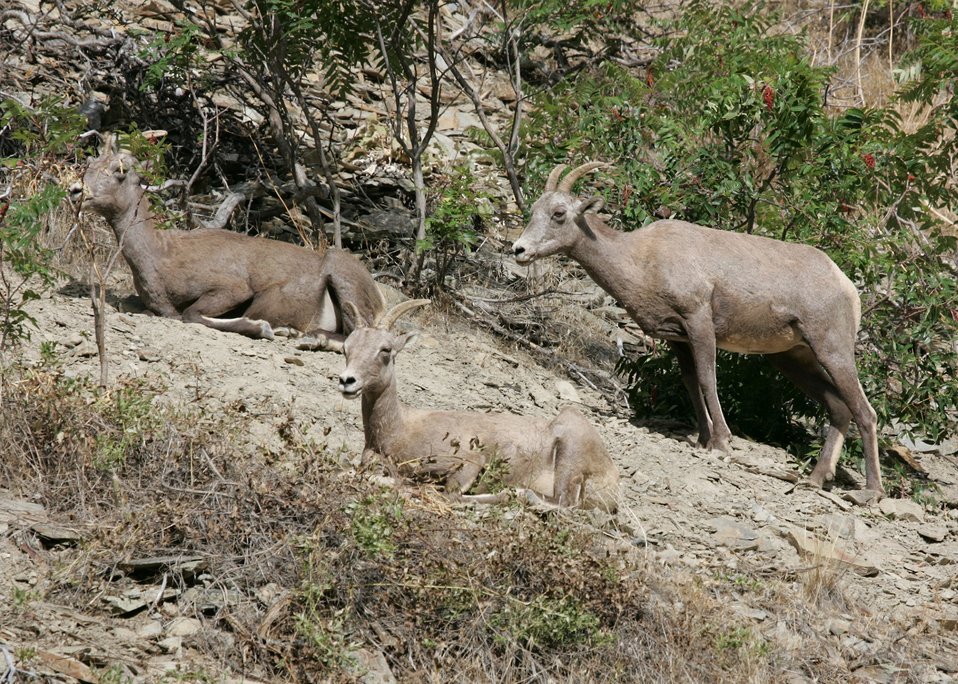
Bighorn sheep in the Connor Creek watershed in eastern Oregon.